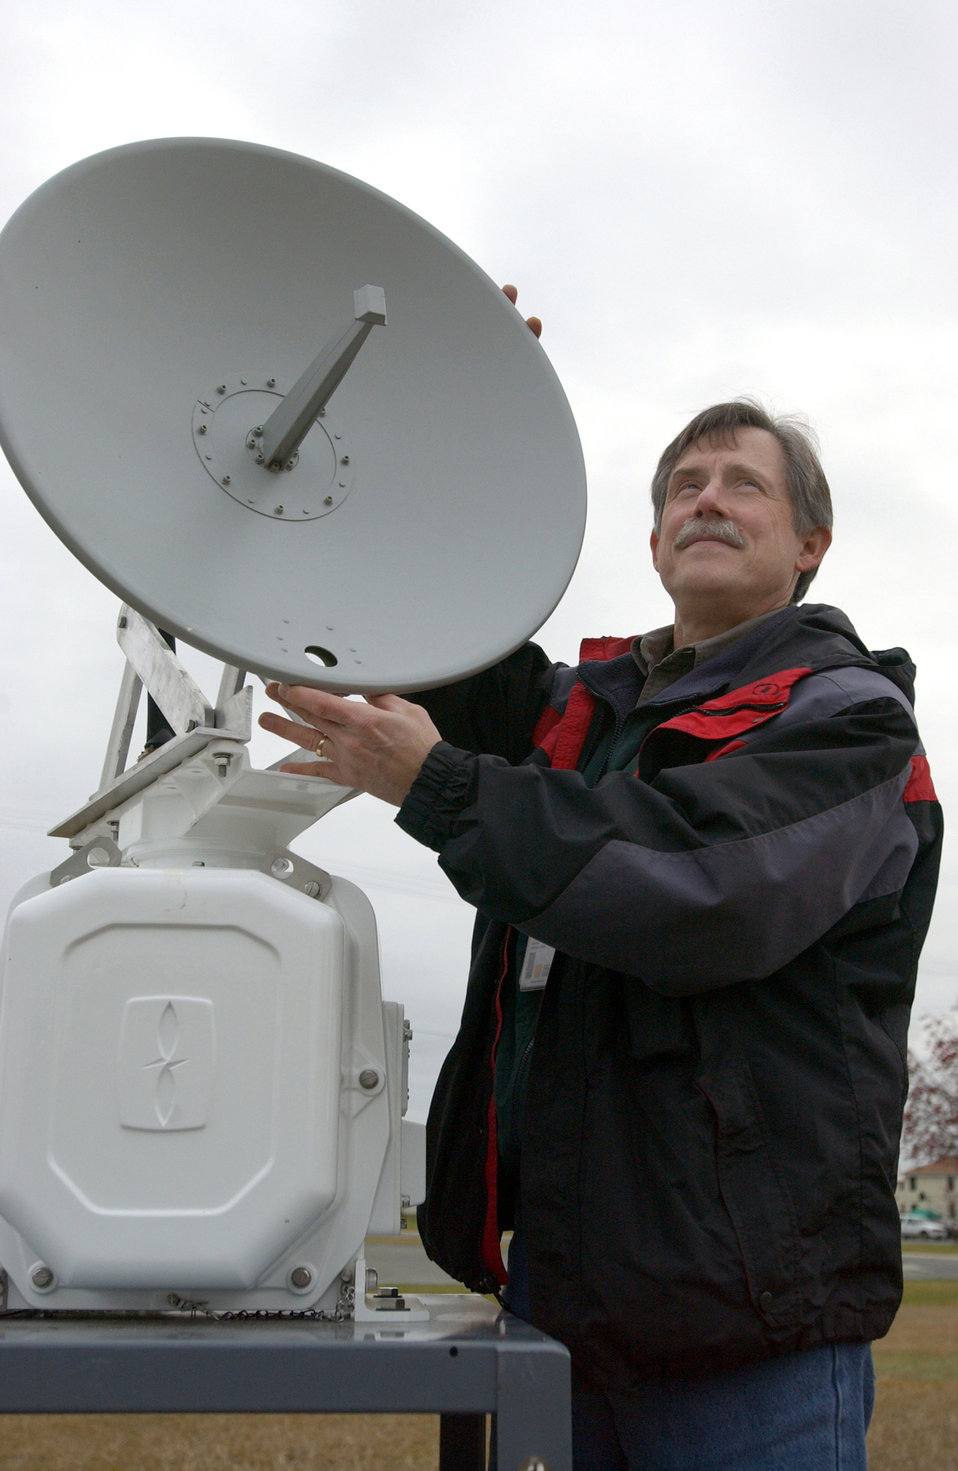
Bird radar tracks patterns

ELMENDORF AIR FORCE BASE, Alaska -- Herman Griese adjusts the satellite dish for the base's bird-radar system. The mobile system is contained in a small trailer and is connected to a revolving satellite dish by a 100-foot umbilical cord. It will allow wildlife experts to observe and document patterns of bird activity. Griese is a wildlife biologist with the 3rd Civil Engineer Squadron.